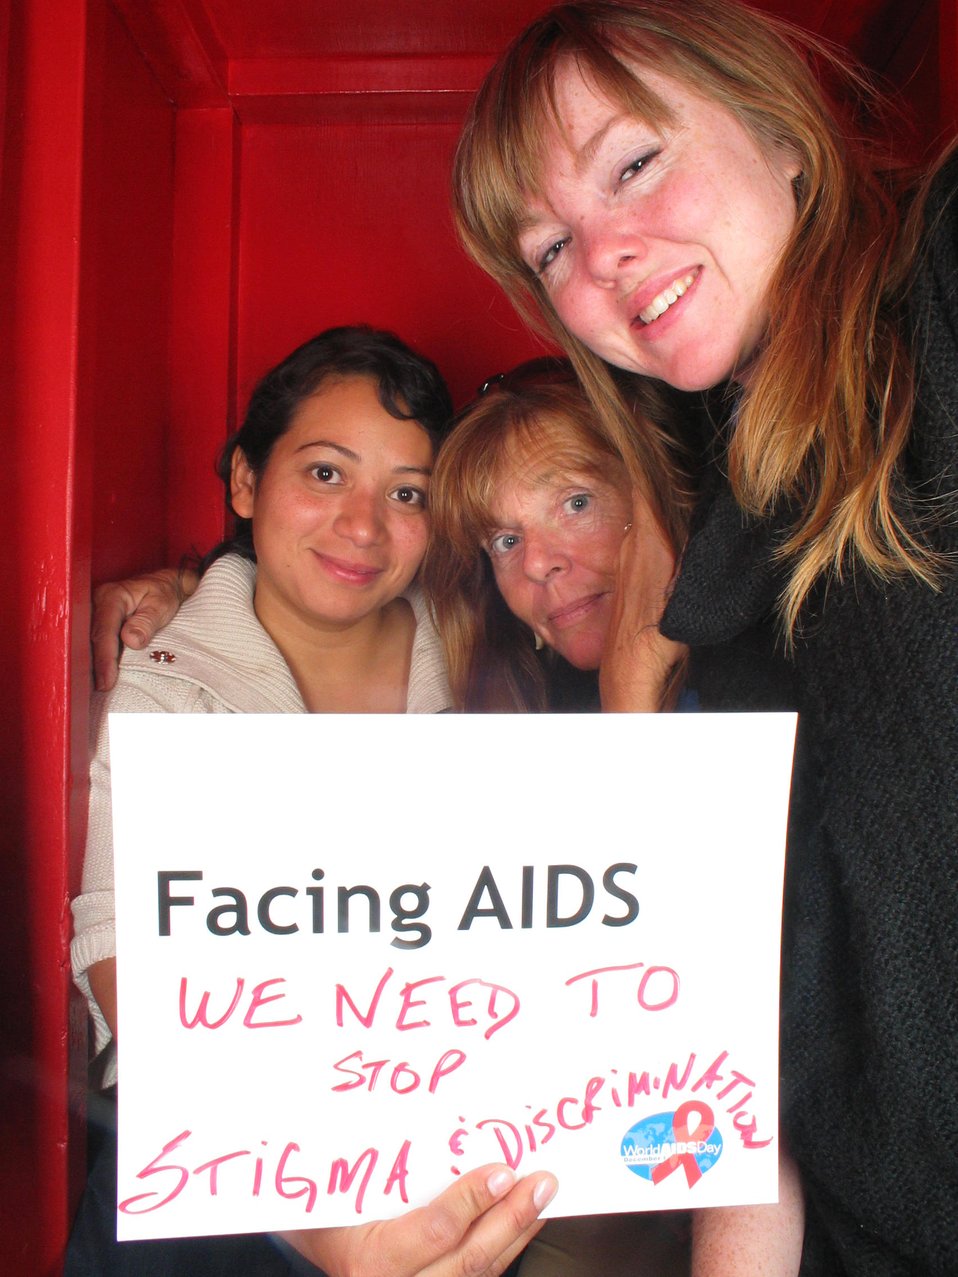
Facing AIDS we need to stop stigma and discrimintation